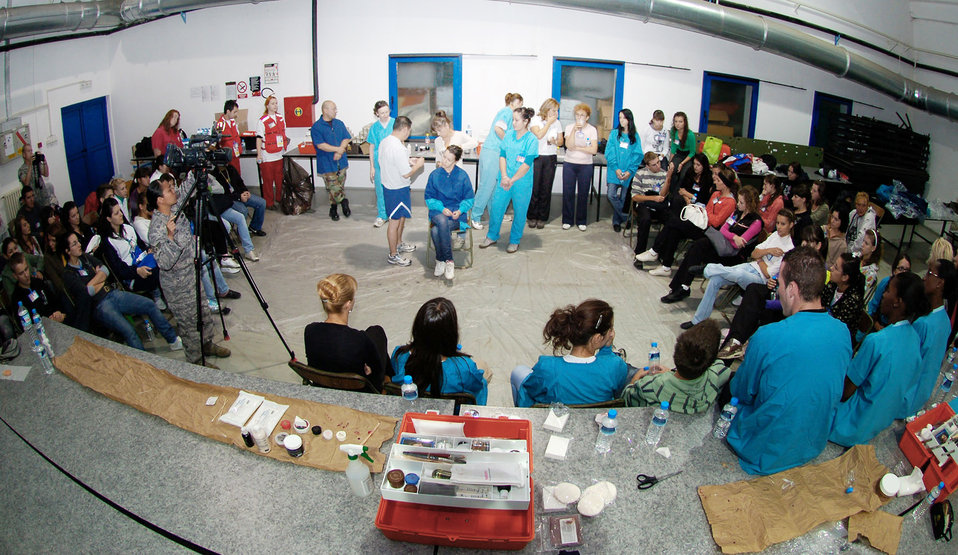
Airmen teach moulage to medical students

Students from Dr. Milenko Hadzic Medical School at Nis, Serbia, watch as Senior Master Sgt. Juan Gomez, 86th Medical Group from Ramstein Air Base Germany, applies a moulage gunshot wound to the neck of a classmate Sept. 8 during a moulage class. Airmen from the 86th Medical Group provided the training to medical students who participated as mock patients in a mass casualty exercise during the live exercise portion of the military medical training exercise in Central and Eastern Europe, or MEDCEUR 2009.